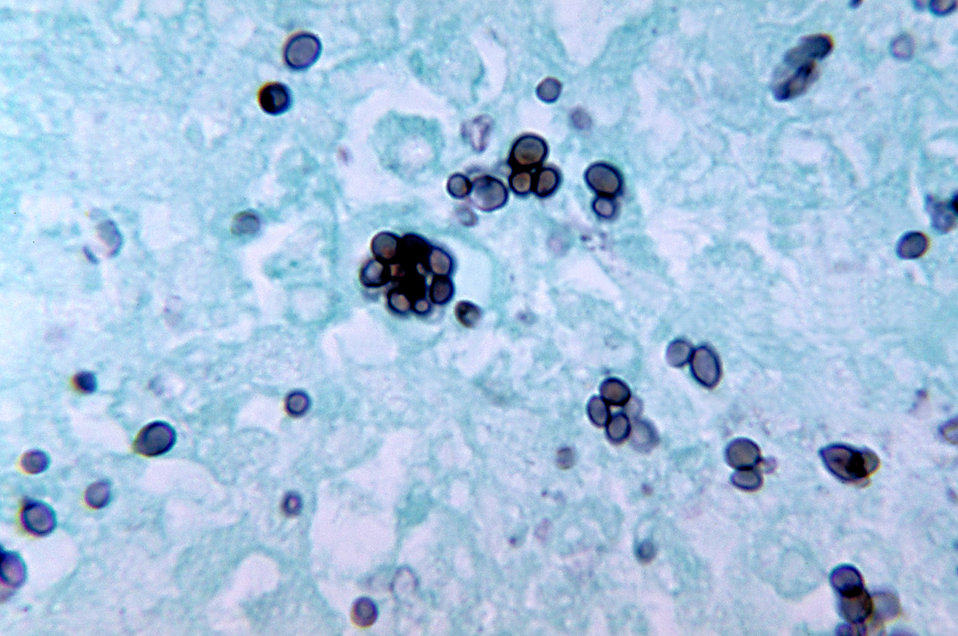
Note the histopathologic changes seen in histoplasmosis due to Histoplasma capsulatum using methenamine silver stain.